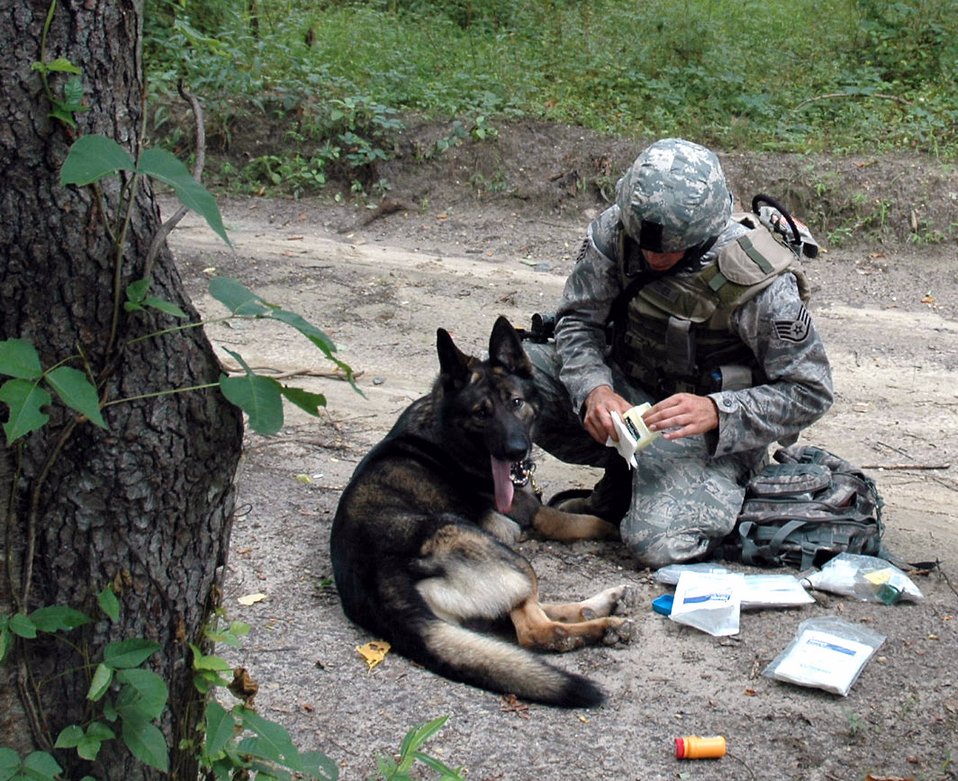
All better now...

Staff Sgt. Chris Tener tends Filo, his military working dog, as part of the combat first aid course in Phoenix Warrior training July 9 on a range at Fort Dix, N.J. Both are from the 509th Security Forces Squadron at Whiteman Air Force Base, Mo.